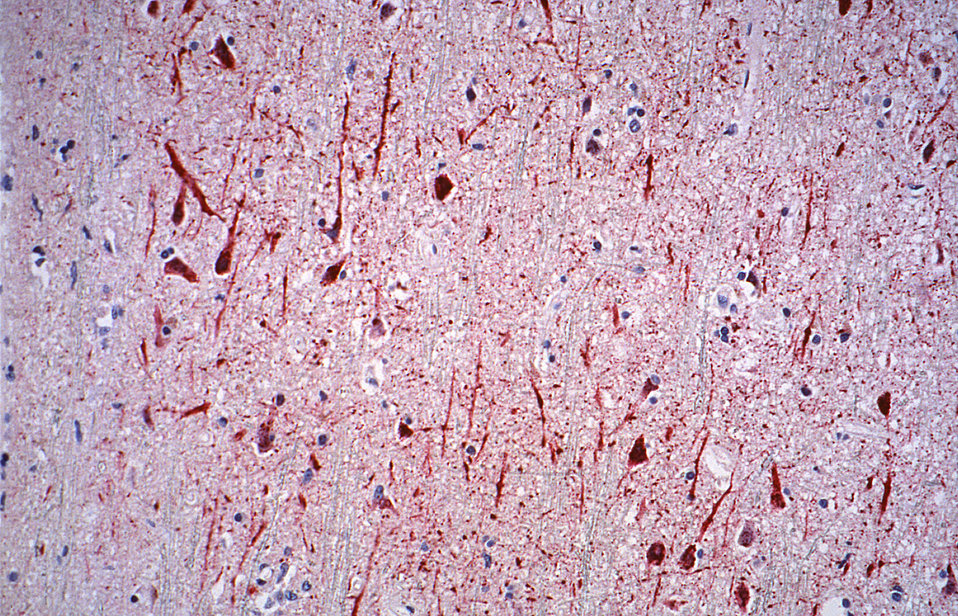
Using immunohistochemical (IHC) technique, this photomicrograph of a human central nervous system (CNS) tissue specimen, revealed some of the cytoarchitectural histopathologic changes associated with a Nipah virus infection. See PHIL 12789 for an enlarged view of a small area of this image.